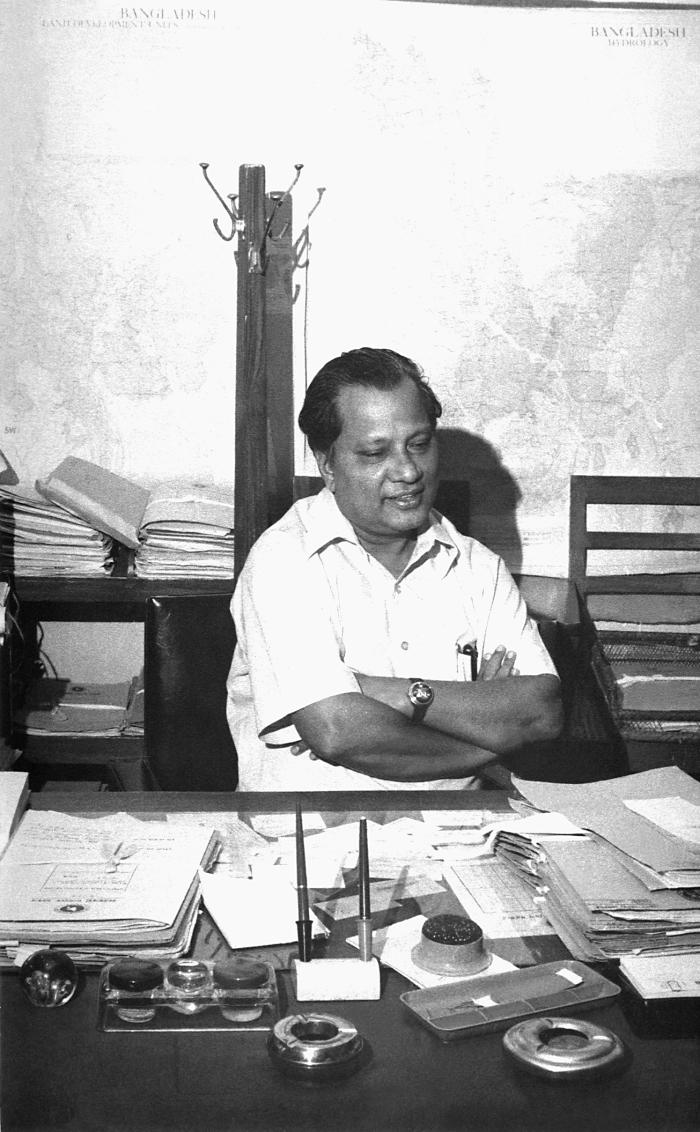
This 1975 photograph depicted one of the Bangladesh Secretaries of Health, Dr. T. Hussein, as he was seated behind his desk during a meeting with members of the smallpox eradication campaign. Integral to the success of the eradication efforts in Bangladesh, was convincing the governmental hierarchy of the need to carry out such a monumental undertaking on a country-wide scale, which at times was initially met with skepticism, but with the actualization of positive results, was soon adopted by all as the one and only way to finally rid Bangladesh, and for that matter, the entire world of this dreaded virus.